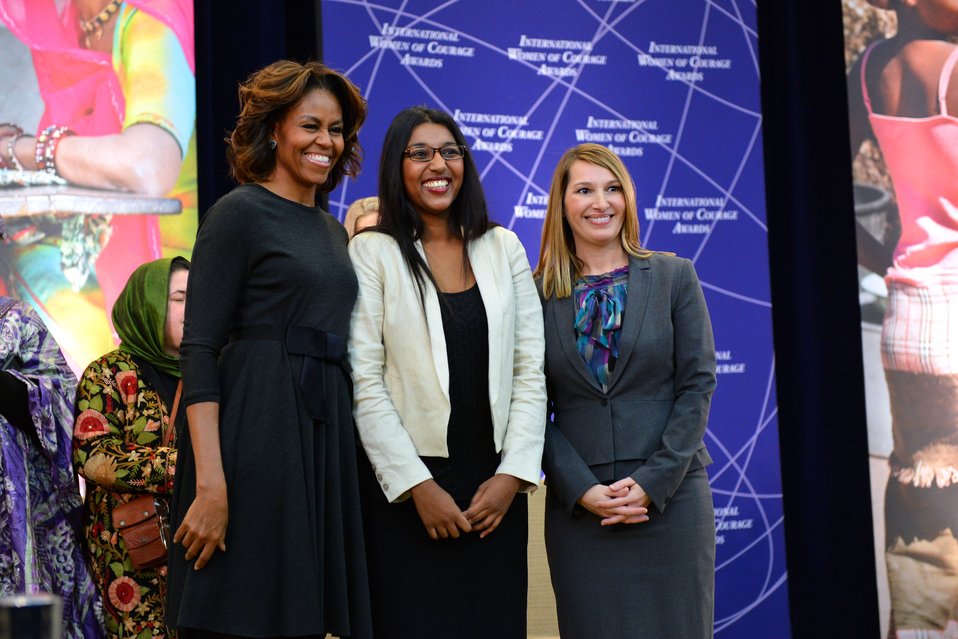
First Lady Michelle Obama and Deputy Secretary Higginbottom With 2014 IWOC Awardee Roshika Deo of Fiji

First Lady Michelle Obama and Deputy Secretary Heather Higginbottom pose for a photo with 2014 Secretary of State’s International Women of Courage Awardee Roshika Deo, a Feminist and Political Activist for the Be the Change Campaign in Fiji, at the U.S. Department of State in Washington, D.C., on March 4, 2014.